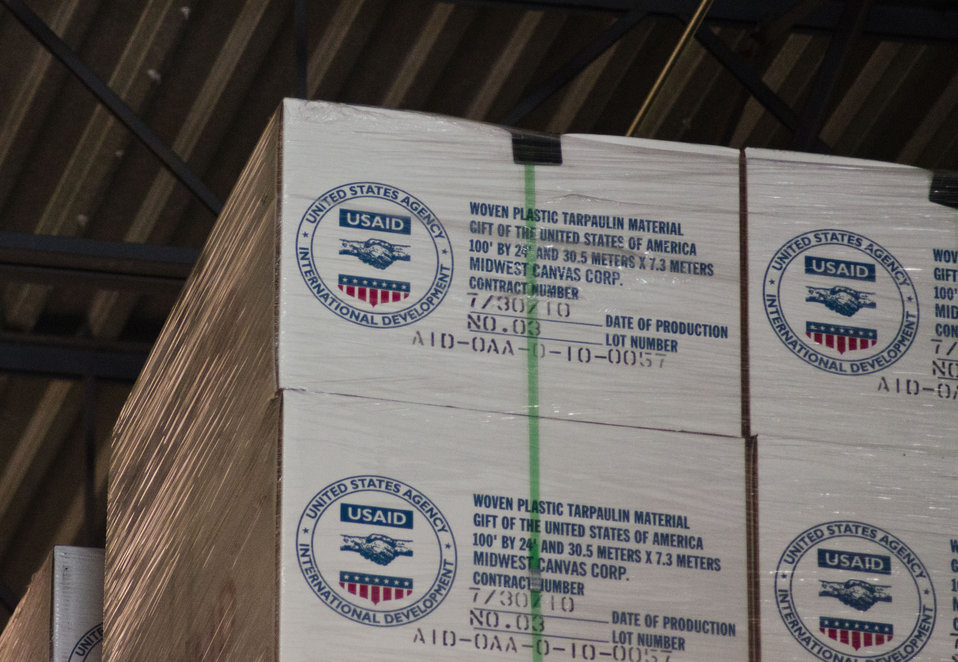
Crowley Logistics in Miami, FL on Friday, August 26, 2011 is one of three U.S. Agency for International Development (USAID) shipping and logistics facilities in the nation. In times of emergency humanitarian relief aid, they can respond with supplies delivered to aircraft at Miami International Airport within two hours. They utilize articulating forklifts, which hinge in the middle to store and retrieve pallets of supplies through narrow aisle ways. This allows for a higher density of stored supplies in the warehouse. Pallets of supplies are stacked three levels high. USAID provides humanitarian assistance through the Office of U.S. Foreign Disaster Assistance (OFDA). OFDA is the lead U.S. Government (USG) office charged with providing and coordinating USG humanitarian assistance in response to international emergencies and disasters. To achieve this, USAID works in cooperation with other USG offices such as the U.S. Department of Agriculture (USDA), and international humanitarian experts. The USDA provides food assistance to support emergency feeding programs in countries experiencing food shortages due to drought and civil conflict.